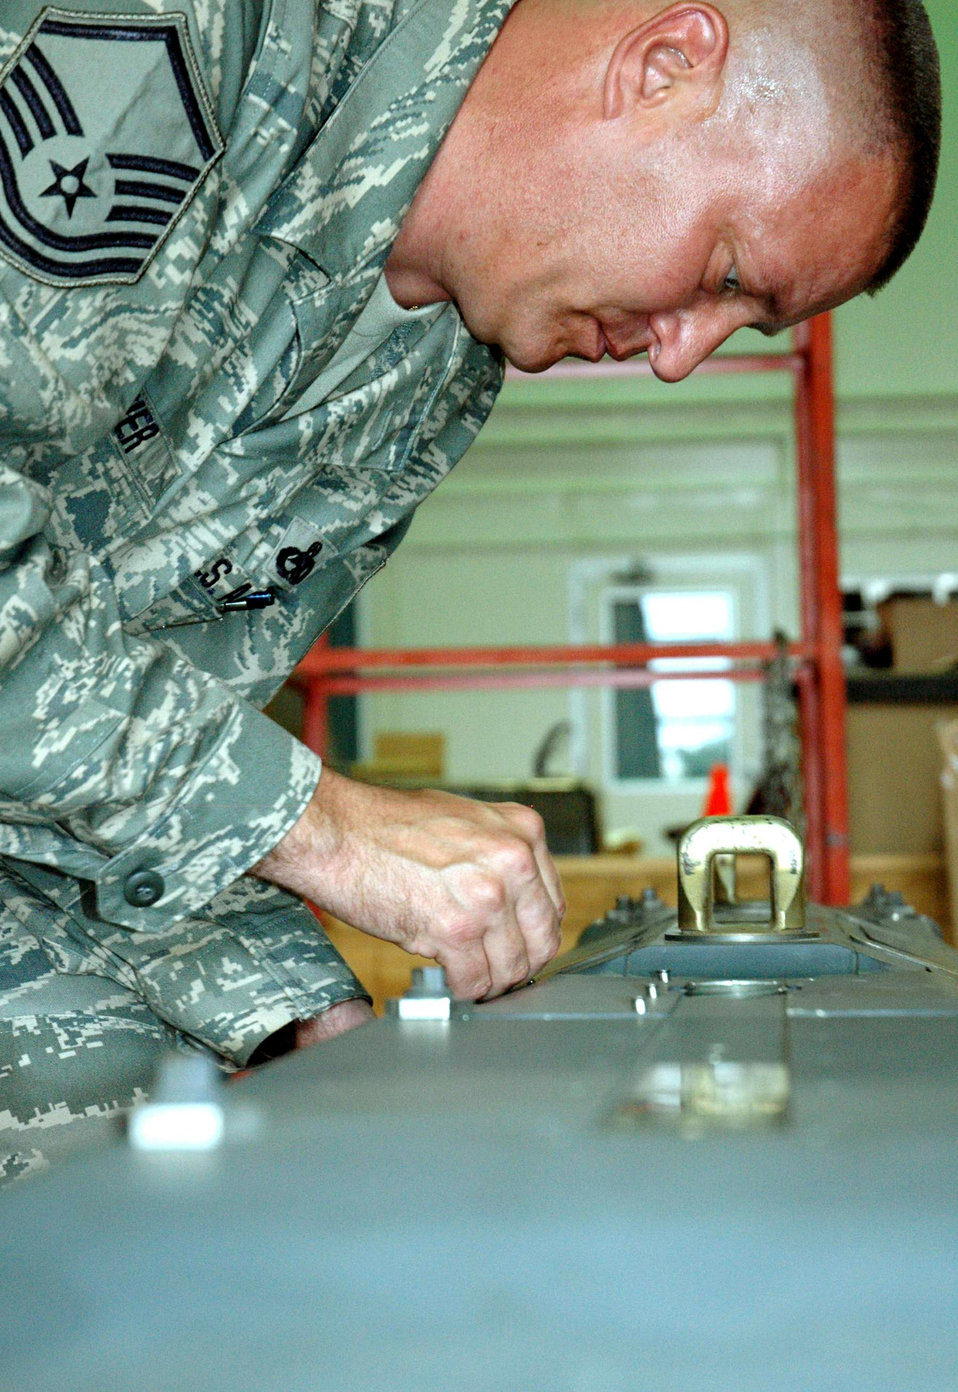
Eglin team prepares Small Diameter Bombs for warfighters

Master Sgt. Brian Mosier tightens the screws to hold the cover of the pneumatic carriage system that holds and discharges the Small Diameter Bombs June 2 at Eglin Air Force Base, Fla. Sergeant Mosier is assigned to the 681st Armament Systems Squadron Small Diameter Bomb logistics team.